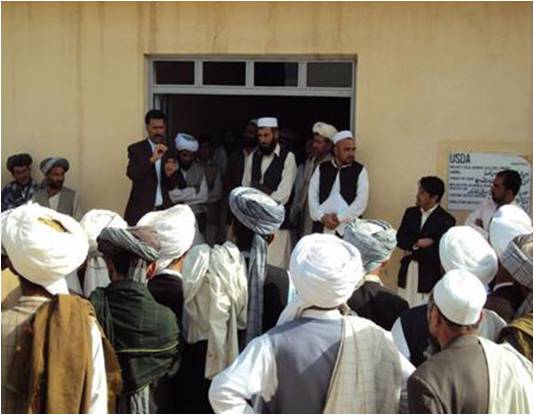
USDA Food for Education Impacts Rural Livelihoods Beyond Agriculture